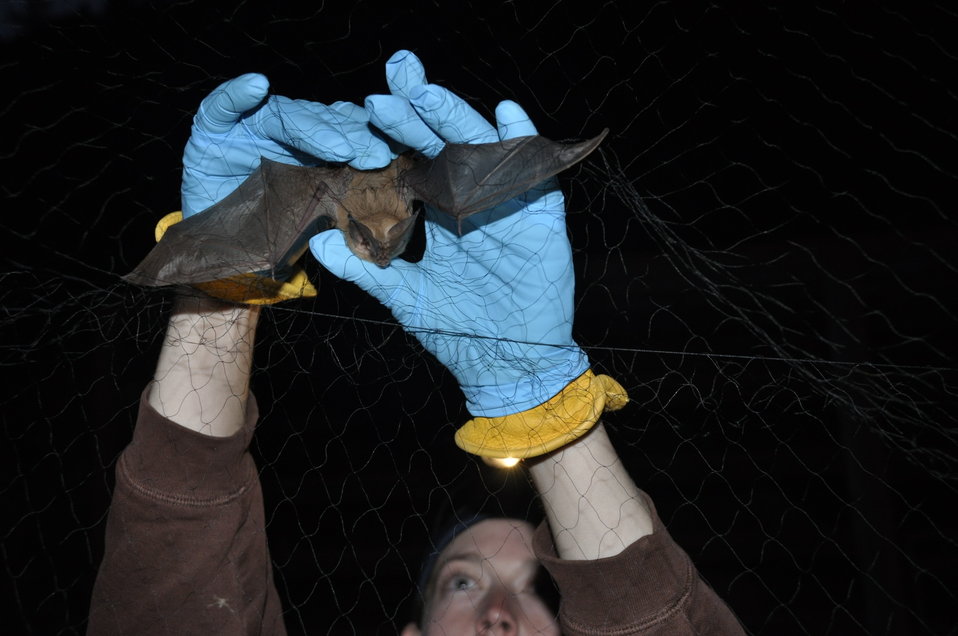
Townsend's big-eared bat in mist net

Technician removes Townsend's big-eared bat (Corynorhinus townsendii) from mist net